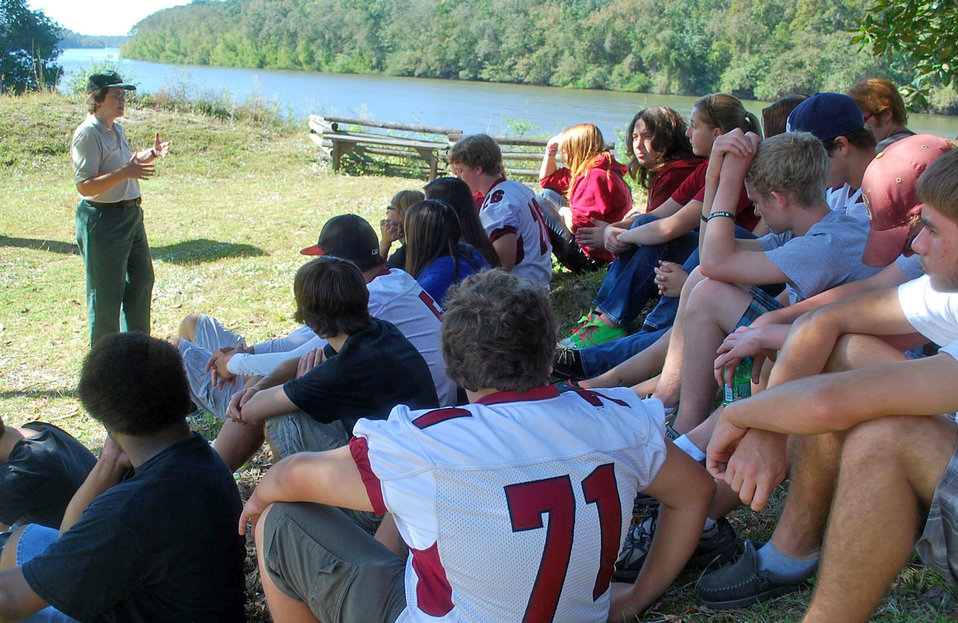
nff fort FS-CG FS arch -7878

Forest Service archaeologist Rhonda Kimbrough gives an interpretive tour of historic Fort Gadsden on the Apalachicola National Forest in Franklin County, Fla., to middle school students late last year. More than 100 middle and high school students attended the event which directly relates to their current school curriculum.